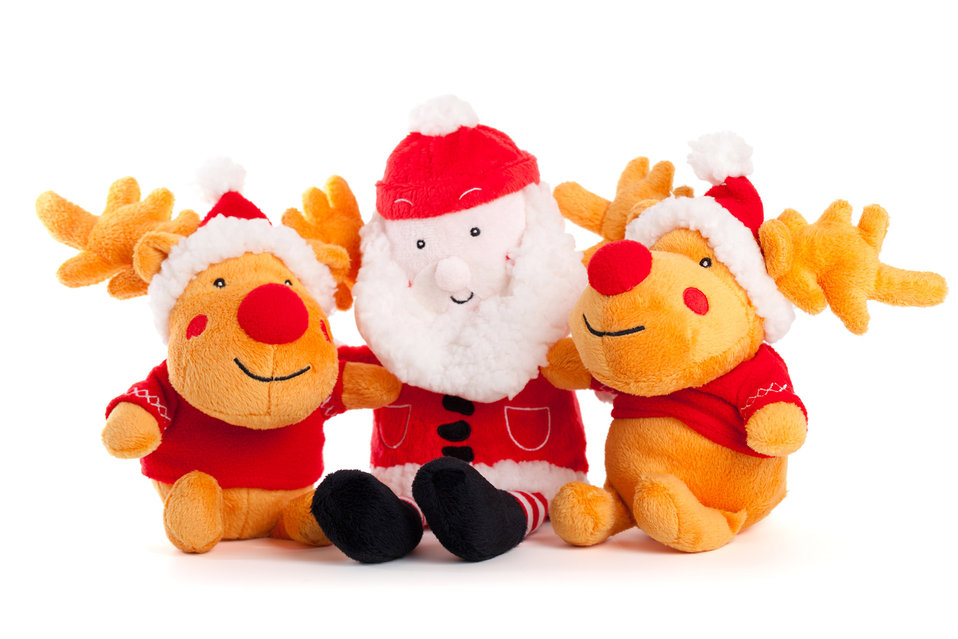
Santa and reindeers

Santa claus and two of his reindeers isolated on white background.